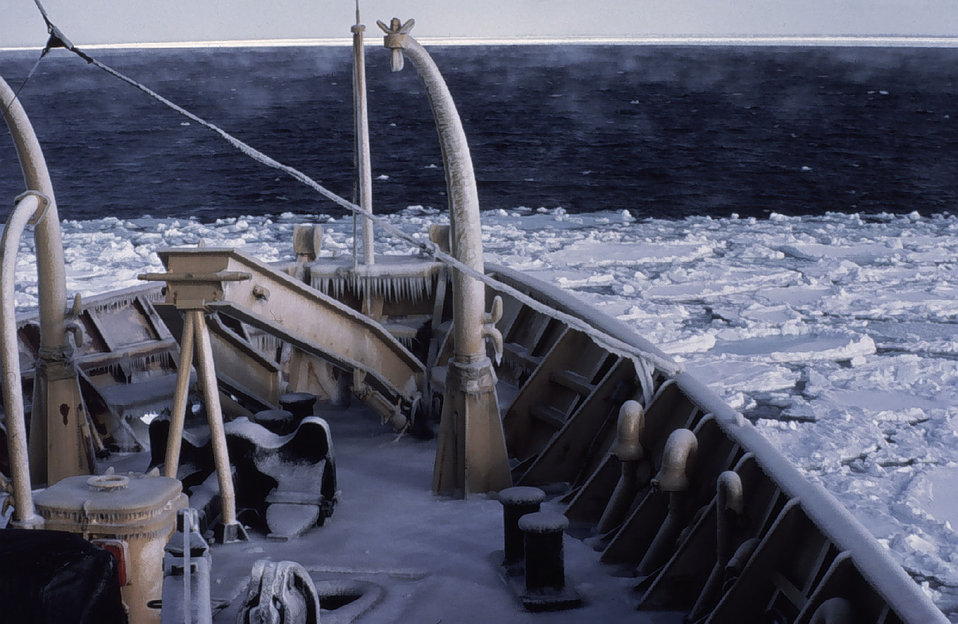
Sea smoke, sea ice, and icicles. NOAA Ship SURVEYOR in some co-l-l-l-d weather